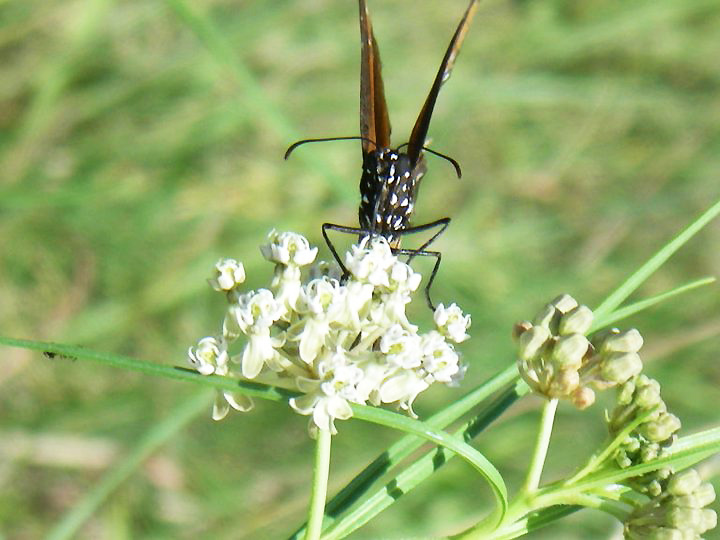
Butterfly

Dexter National Fish Hatchery and Technology Center